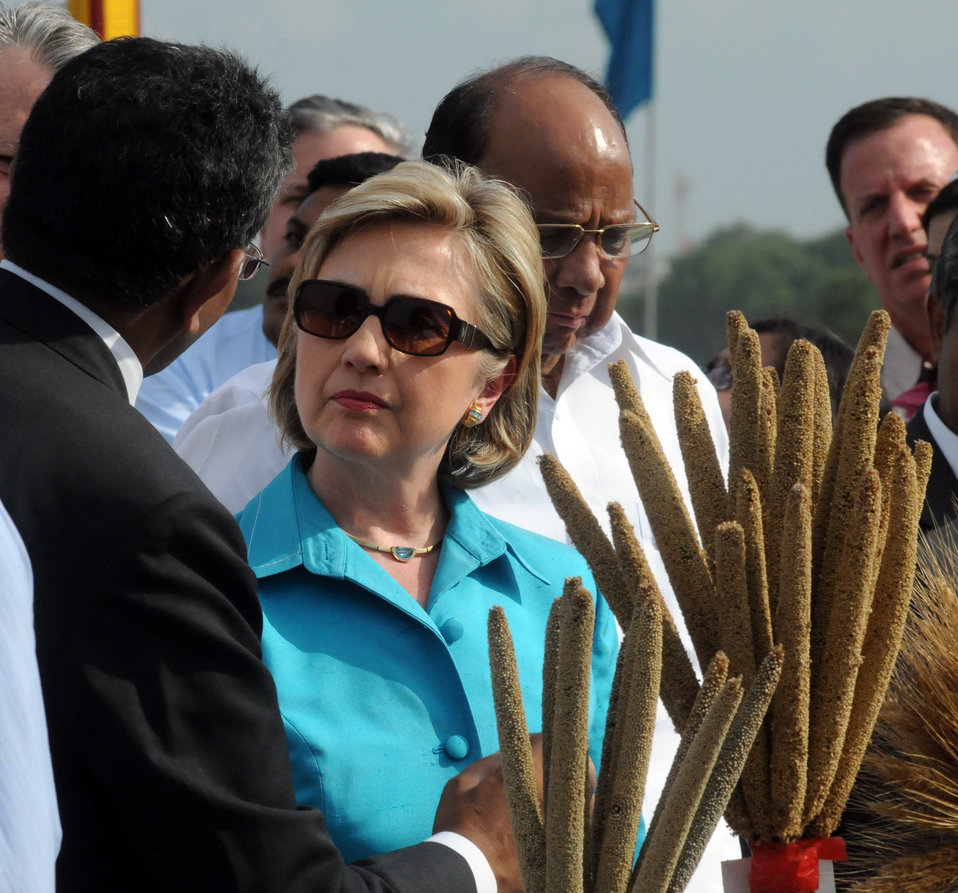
Secretary Clinton Visits Indian Agricultural Research Institute

U.S. Secretary of State Hillary Rodham Clinton, Sharad Pawar, Minister of Agriculture, Consumer Affairs, Food and Public Distribution, and Dr. Mangala Rai, President of the National Academy of Agricultural Sciences, examine wheat samples at the Indian Council for Agricultural Research’s (ICAR) Indian Agricultural Research Institute (IARI) in Pusa, New Delhi, India July 19, 2009.